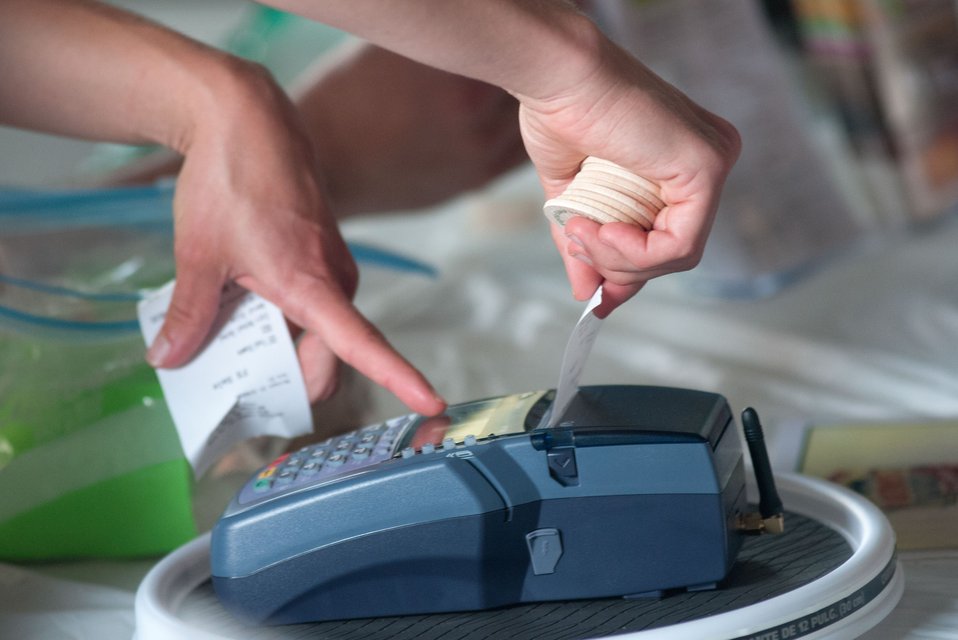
This electronic card reader using a wireless connection allows consumers to use the U.S. Department of Agriculture’s (USDA) Food Nutrition Service’s (FNS) Supplemental Nutrition Assistance Program (SNAP) Electronic Benefits Transfer (EBT) cards, Baltimore Bucks, and debit cards for Baltimore’s Farmers Market and Bazaar tokens in Baltimore, MD on Sunday, July 8, 2012. Today marked the new wireless capability that supports portable terminal use to accept “SNAP participation at farmers markets helps provide fresh fruit and vegetables to families and expands the customer base for local farmers in the Delmarva area, a win-win for agriculture and local communities,” said Agriculture Deputy Secretary Kathleen Merrigan. “And when we couple SNAP access at farmers' markets with strategies like education, cooking demonstrations, and community support in the Baltimore area, consumption of healthy foods has potential to grow even more.”